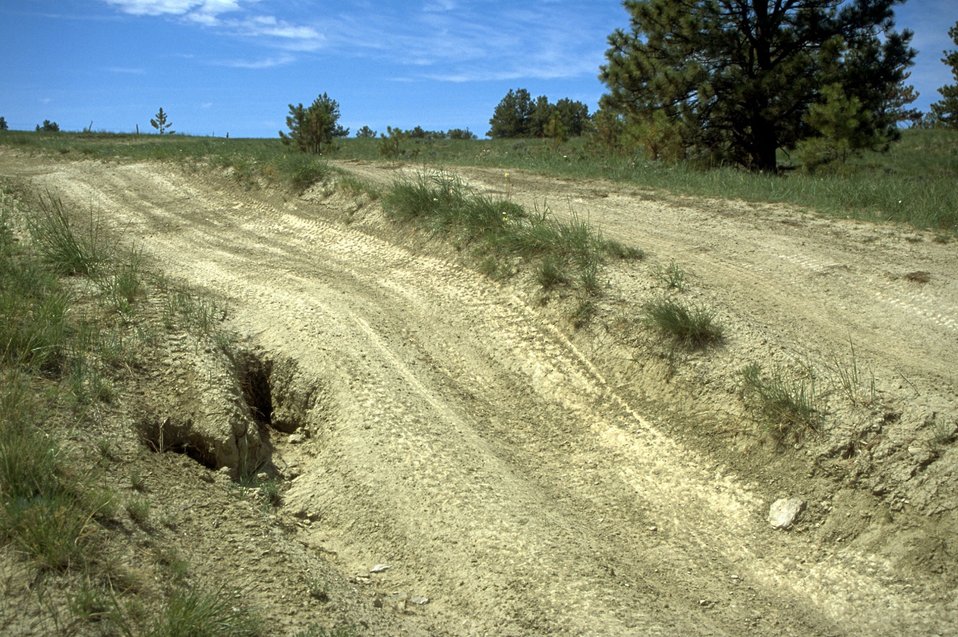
Well-used OHV trails in Area 1 in the Shepherd Recreation Area